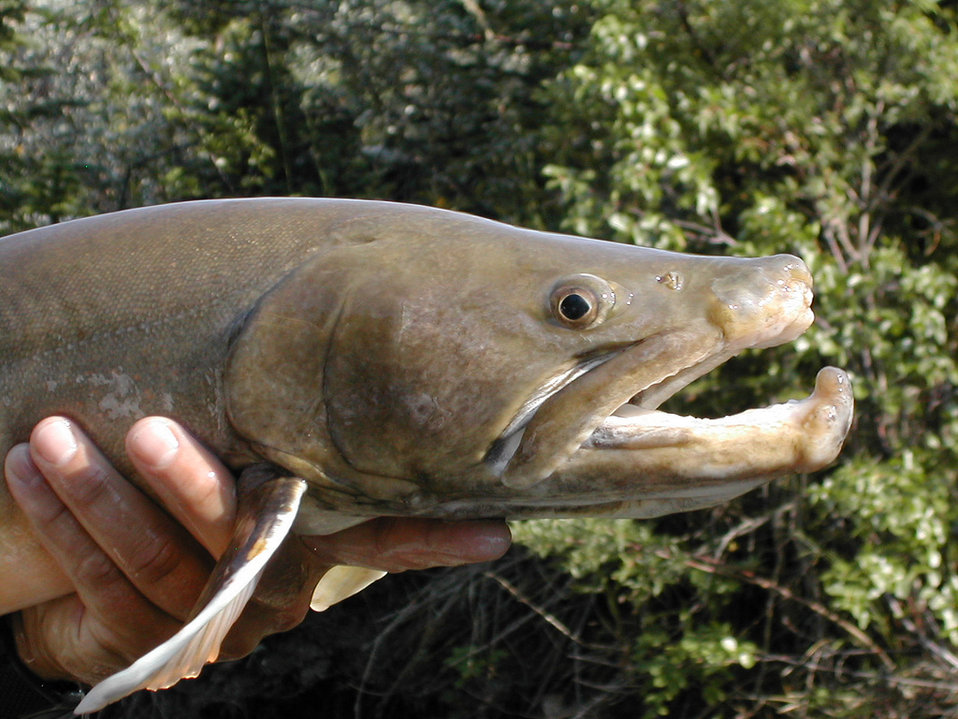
Big Bull Trout

Bull trout, a threatened species, gets the attention of Montana Fish and Wildlife Conservation Office scientists, particularly on the Blackfeet Reservation.